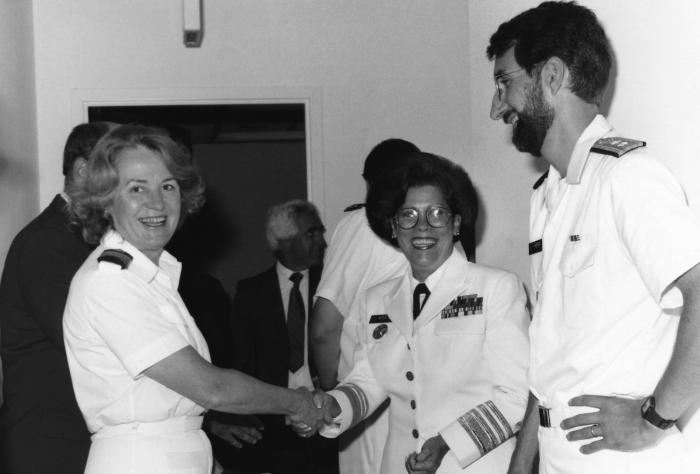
This 1991 photograph showed Mary E. Guinan, M.D., Ph.D. (left) shaking hands with U.S Surgeon General Antonia C. Novello, M.D., M.P.H. (1990 - 1993) (middle), while former Centers for Disease Control Director William L. Roper, M.D., M.P.H. (1990 - 1993) (right) welcomed Dr. Novello to the CDC.